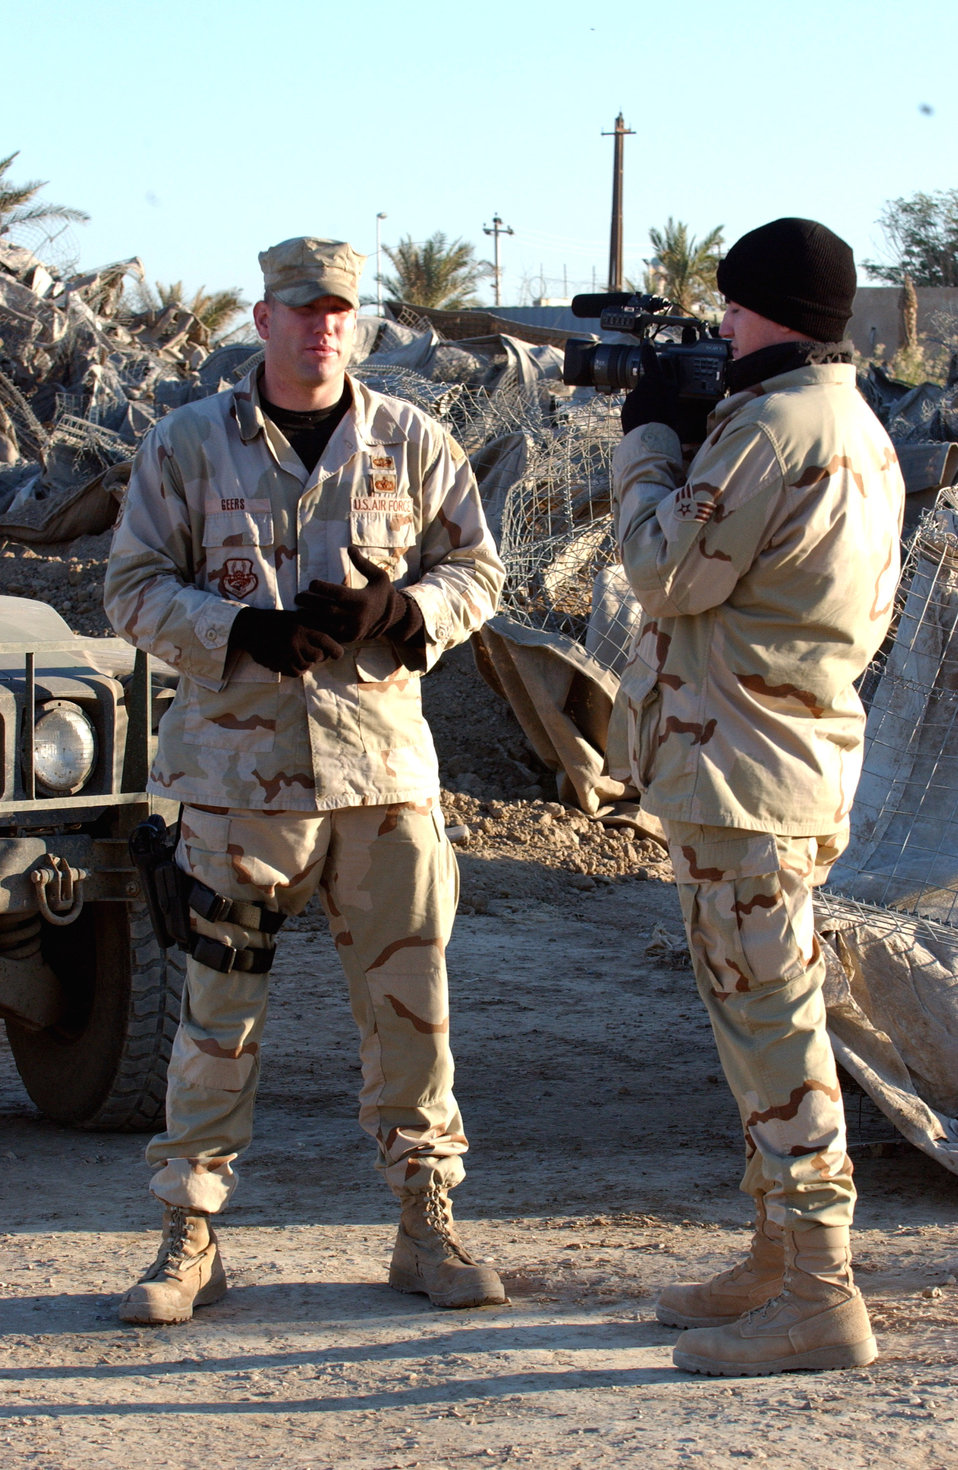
Patrolling Baghdad

Staff Sgt. Justin Geers, left, Detachment 7, 732nd Expeditionary Security Forces Squadron briefs Senior Airman Blake Stilwell, a videographer from 1st Combat Camera Squadron, on Nov. 10. The squadron's mission is to deploy into the city streets of Baghdad to assist Iraqi police in achieving self-sufficiency and enable orderly control of their battle space.